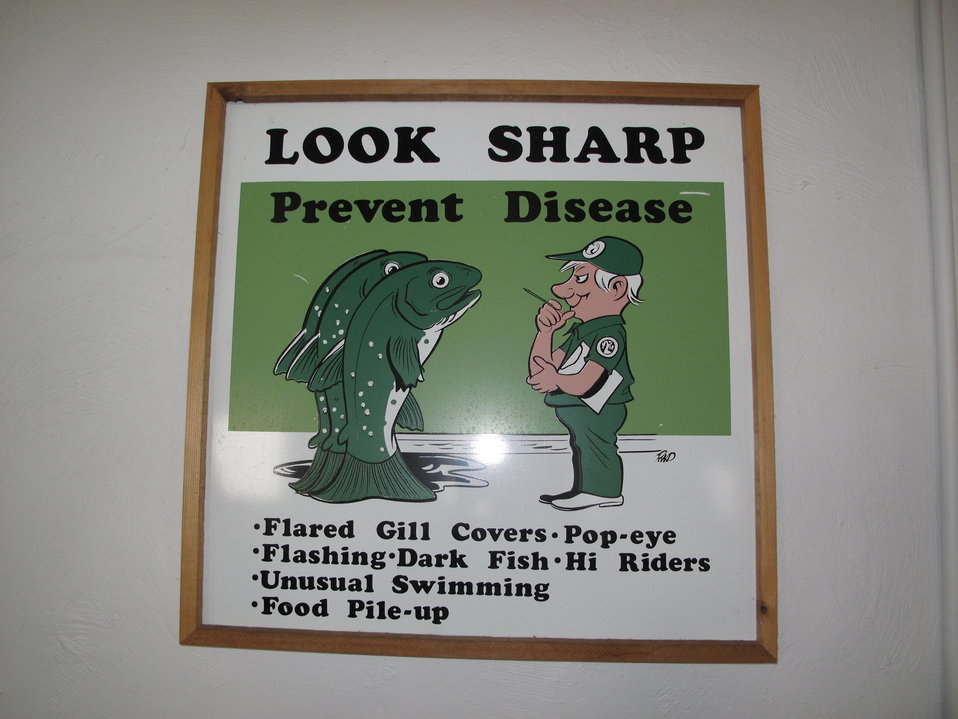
Leadville National Fish Hatchery

Hatchery workers take great pains to prevent the incidence and spread of disease amongst the fish.